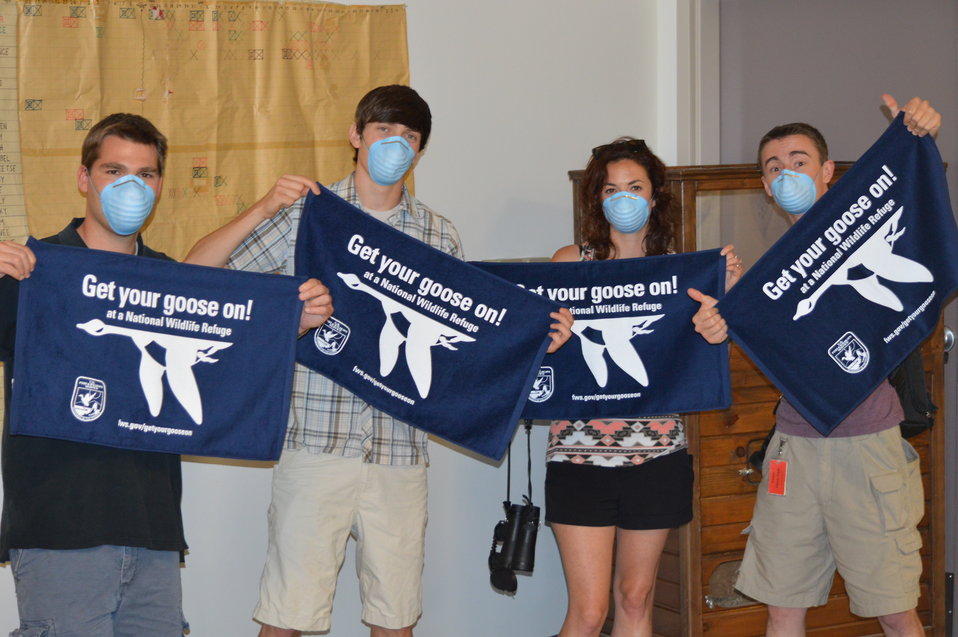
Interns visit the NBFFCC

The Interns! In the summer of 2012, USFWS Region 6 interns visited the National Black-footed Ferret Conservation Center (NBFFCC) in Colorado to learn how the program reintroduces the endangered Black-footed ferret back into its native habitat.